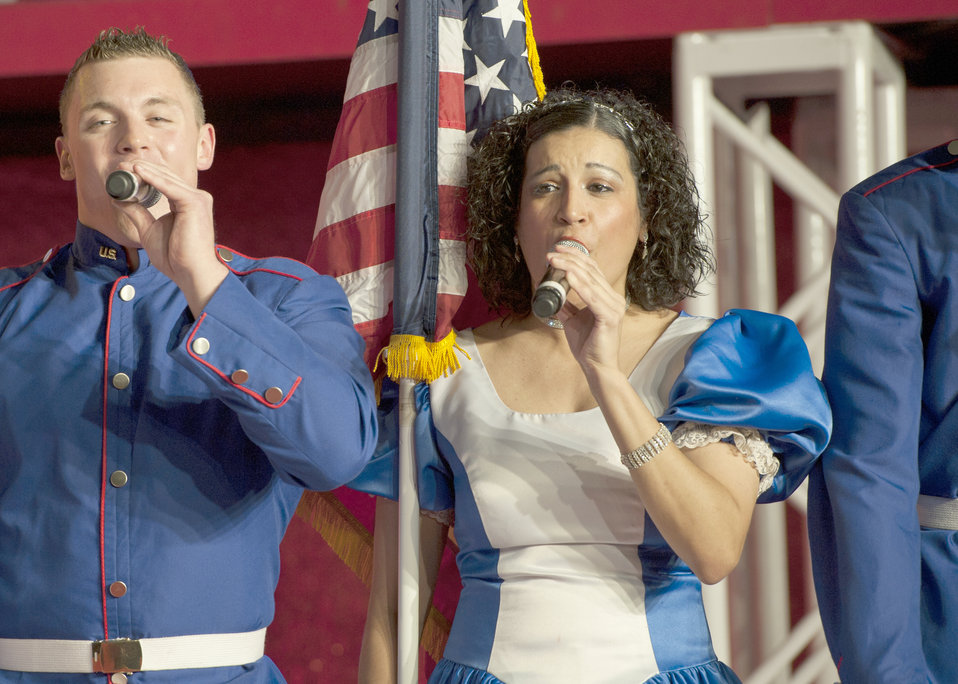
Tops in Blue ‘wows’ audience with their Talent

1st Lt. Robert Doyle, Tops in Blue officer in charge and vocalist, and Fairchild Air Force bases own, Staff Sgt. Abigail Foster, 92nd Maintenance Squadron non-destructive inspection journeyman and Tops in Blue vocalist, sing at the 2011 tour “Rhythm Nation.” The performance brought to life the music of America, from early 1900s through today.